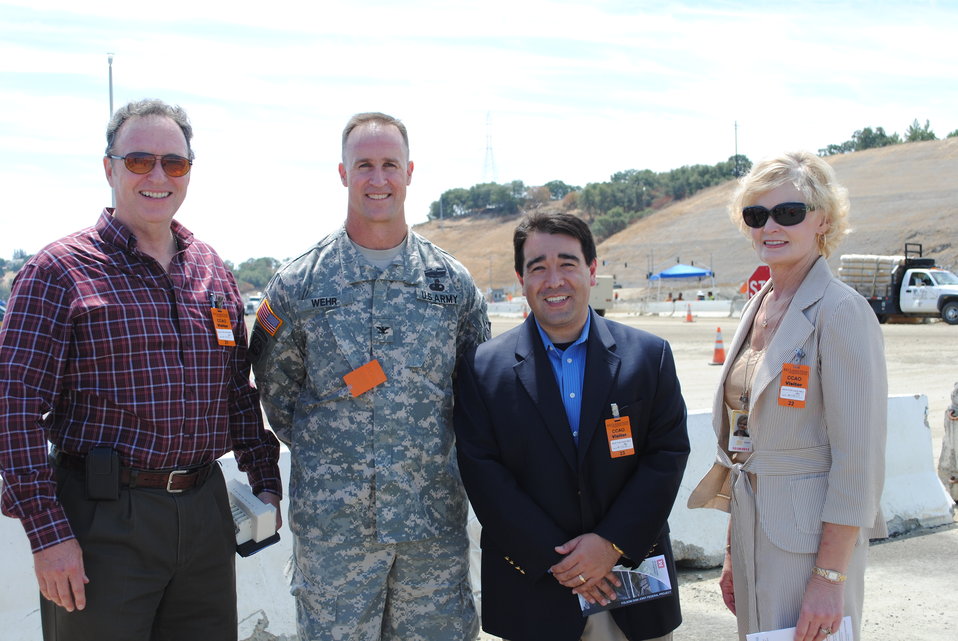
Congressman Dan Lungren, Col. Mike Wehr and congressional staff tour Folsom Dam

(From left) Congressman Dan Lungren, Col. Mike Wehr and Congressional staff tour Folsom Dam on Aug 12, 2011.